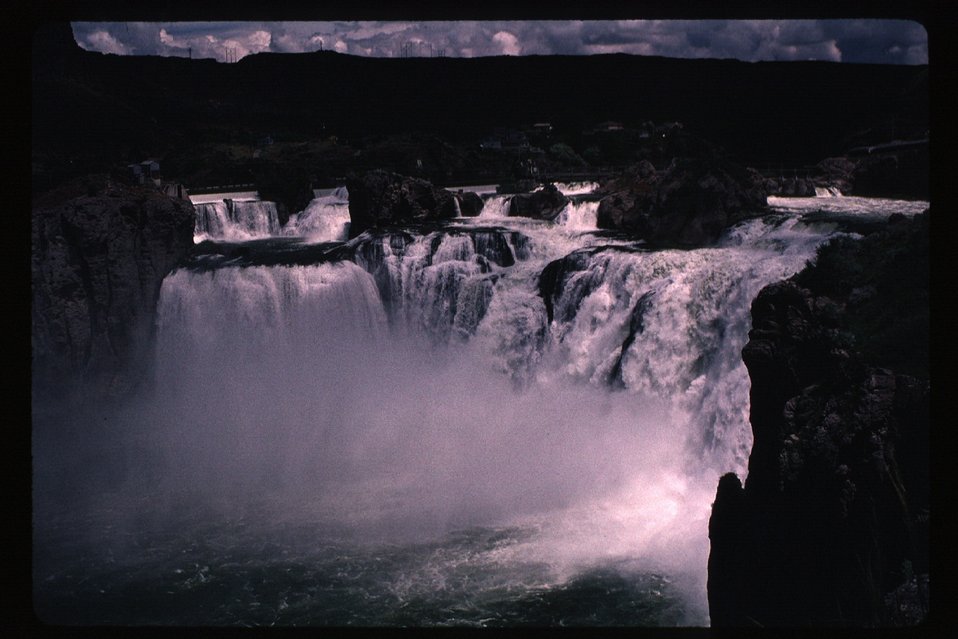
Water falls Rapids Recreation Scenic Snake River Jarbidge Field Office LSRD Lower Snake River District